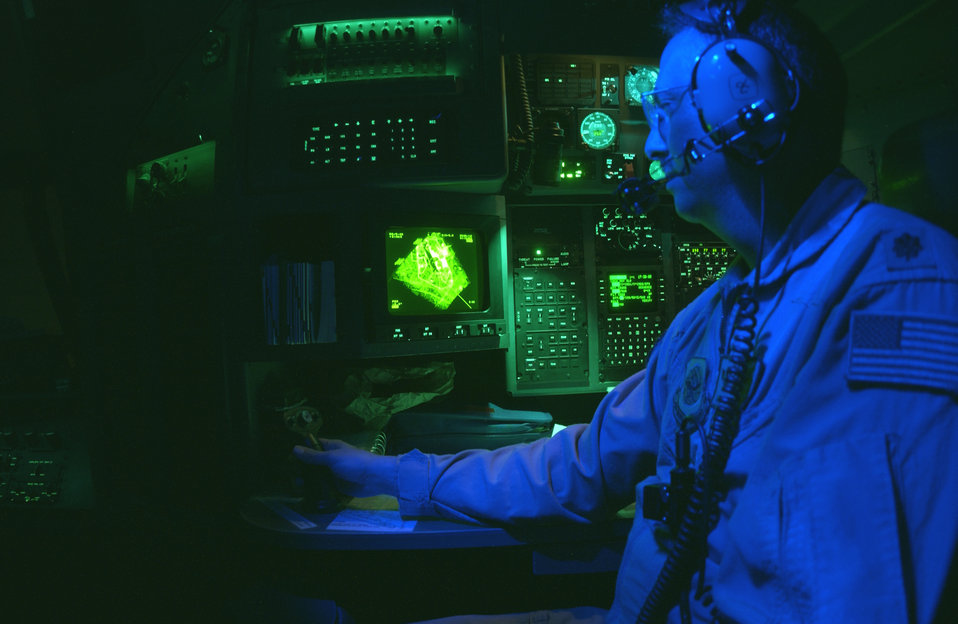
Cross into the blue

SOUTHWEST ASIA -- Maj. David Kaplan uses the latest C-130H3 radar display to assist him during his deployment with the 379th Expeditionary Airlift Wing. He is assigned to the West Virginia Air National Guard's 167th Airlift Wing at a forward-deployed location.